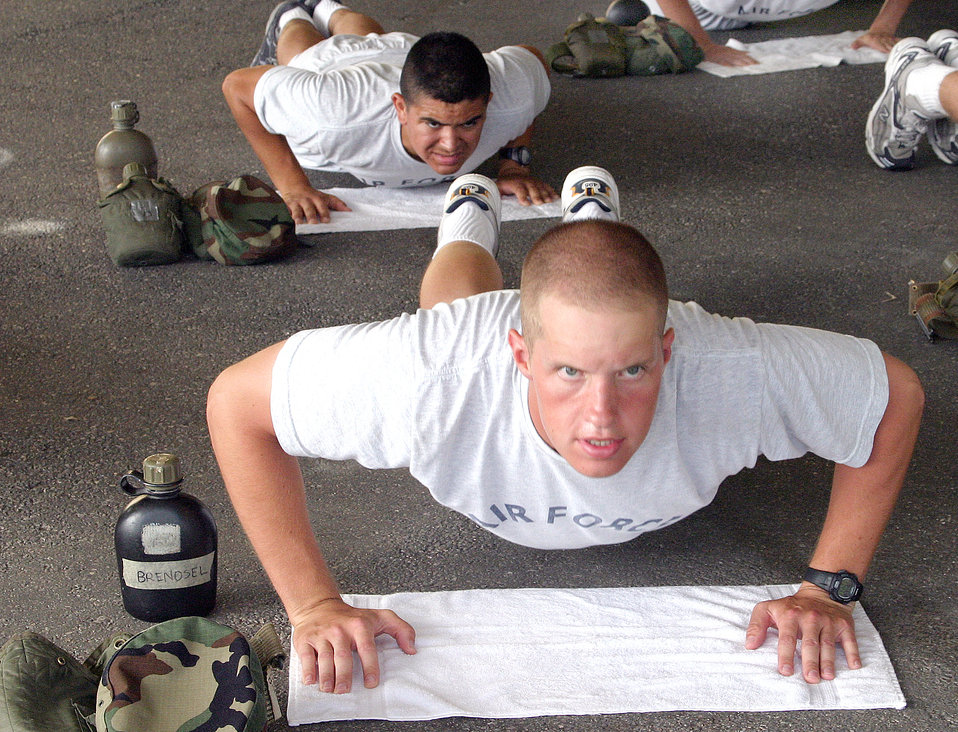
ROTC cadets pass field-training test at Lackland

LACKLAND AIR FORCE BASE, Texas -- Cadet Eric Brendsel (foreground) does push-ups during afternoon physical training for ROTC cadets here. More than 500 cadets completed six weeks of ROTC field training here July 23. Cadet Brendsel is a student at the University of Iowa.